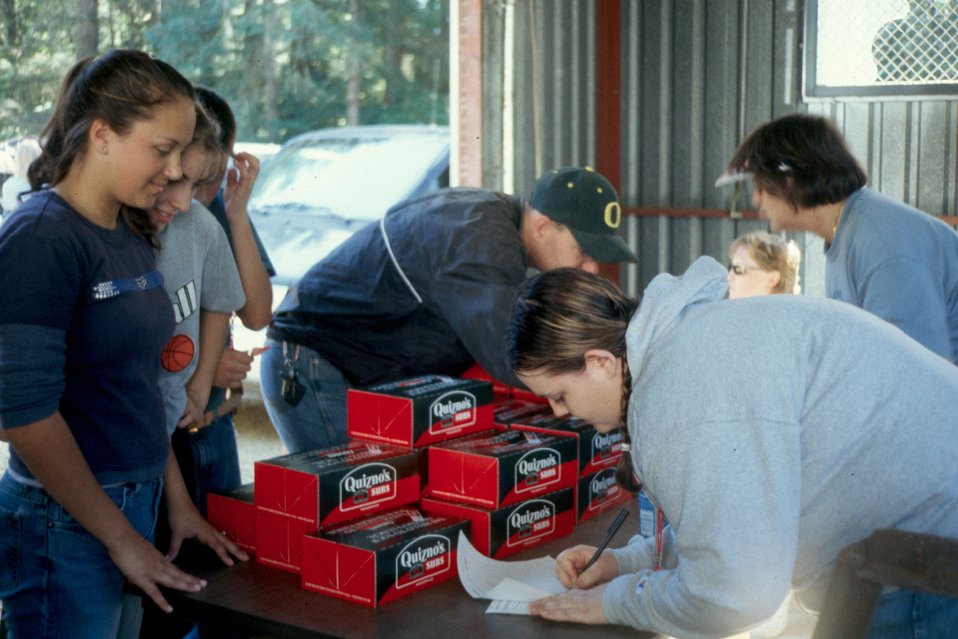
Choosing lunches and checking in after completing projects